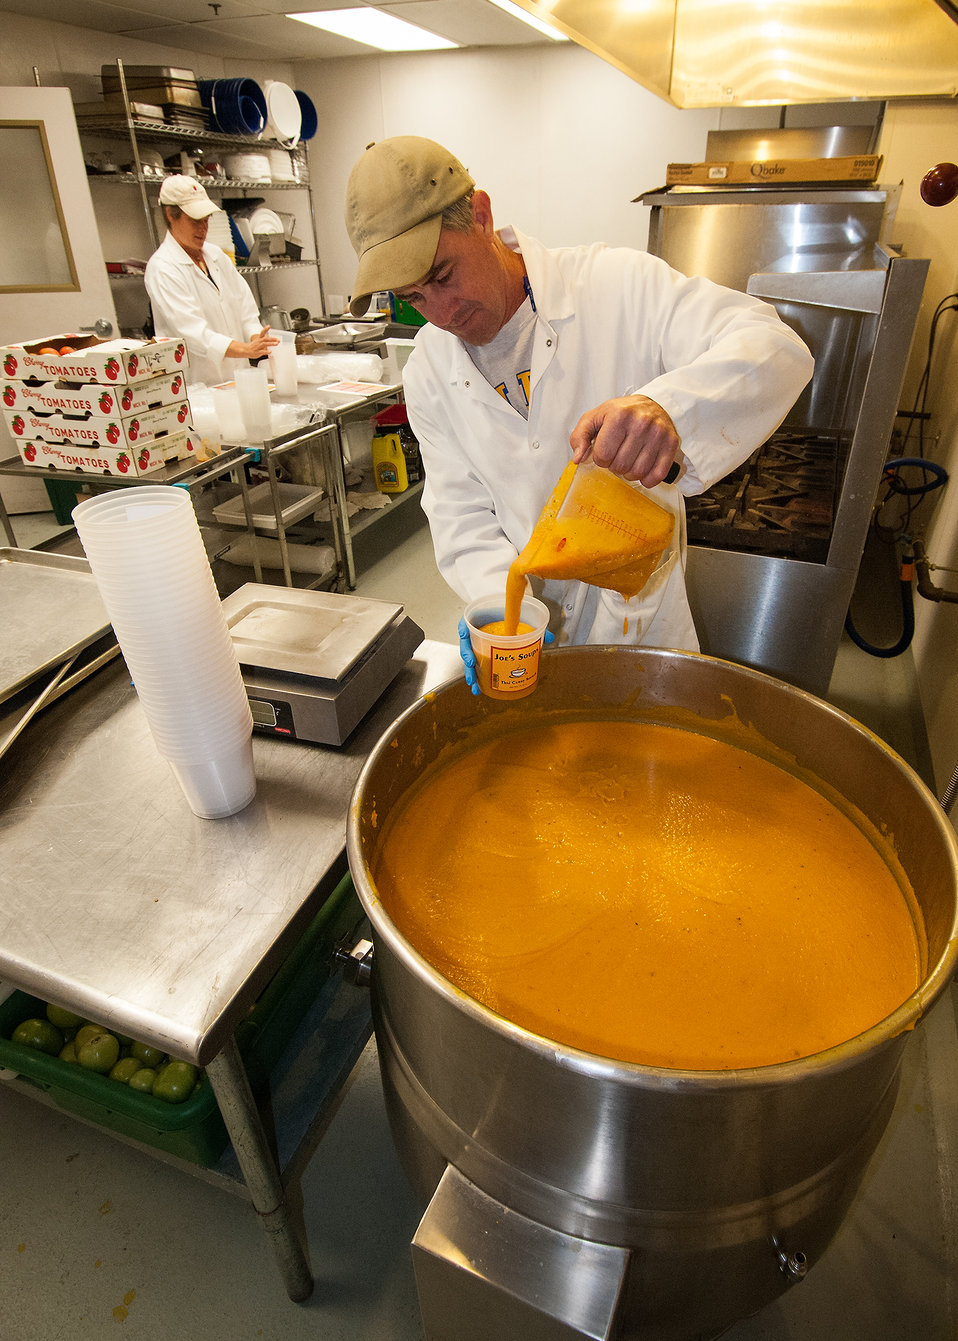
Joe Buley and Quayl Rewinski, from Screamin' Ridge Farm in East Montpelier, VT prepare enchilada sauce at The Mad River Food Hub in Waitsfield, VT. The Mad River Food Hub received a U.S. Department of Agriculture (USDA) Rural Development (RD) Rural Business Enterprise Grant for the local farmers to grow vegetables, produce meat products and convert them to value added products ready for market on Sep 17, 2013.